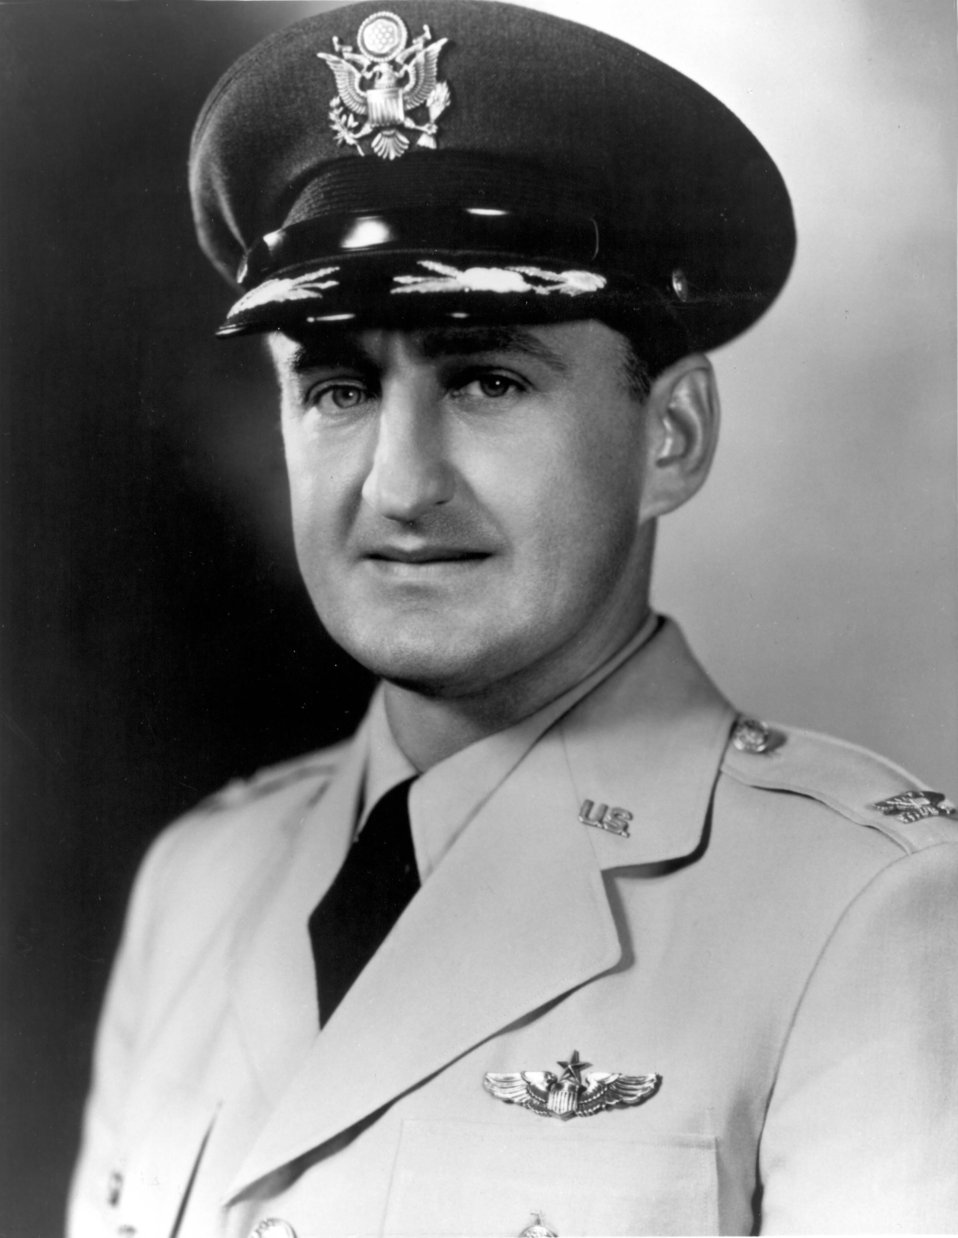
Francis S. Gabreski

1940's -- Colonel Francis S. Gabreski, the leading U.S. ace in the World War II European theater, was also an ace in Korea and is still the top American ace, with 34.5 victories.